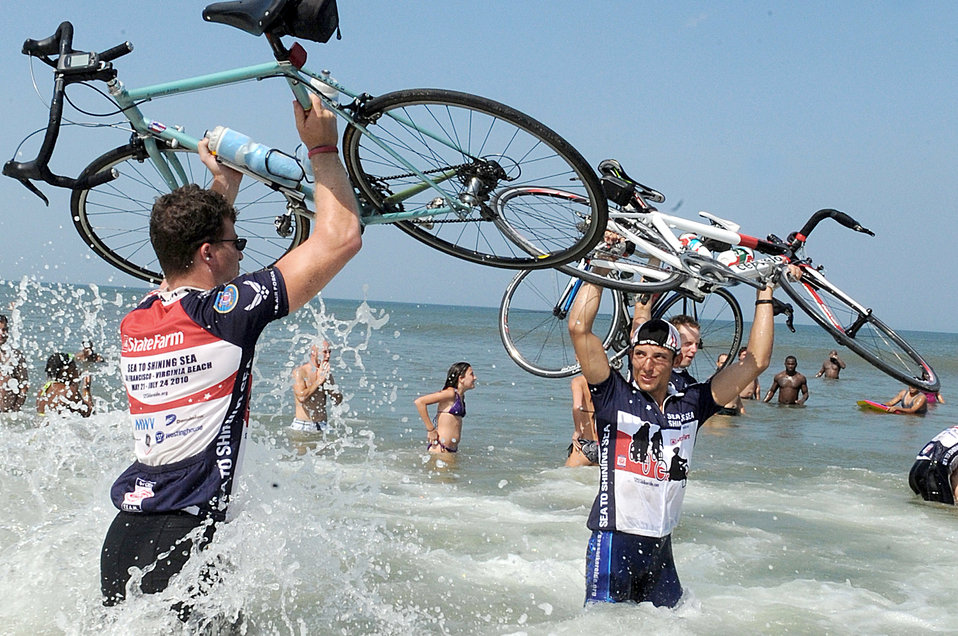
Sea to Shining Sea

Riders celebrate in the Atlantic Ocean during the closing ceremony of Sea to Shining Sea July 24, 2010, in Virginia Beach, Va. Sea to Shining Sea is a 4,000-mile bike ride that started at the Golden Gate Bridge in San Francisco, and ended in Virginia Beach.